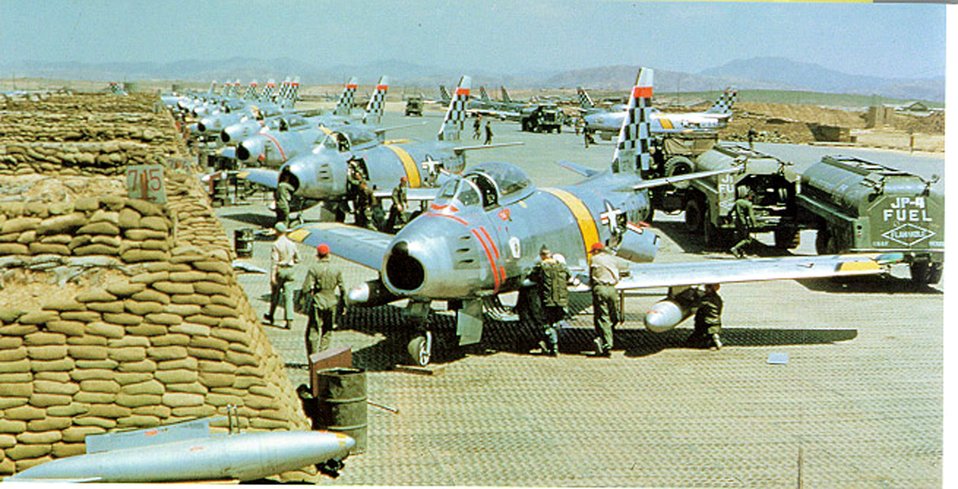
F-86 Sabres in Korea

F-86 Sabres with their 51st Fighter Interceptor Wing